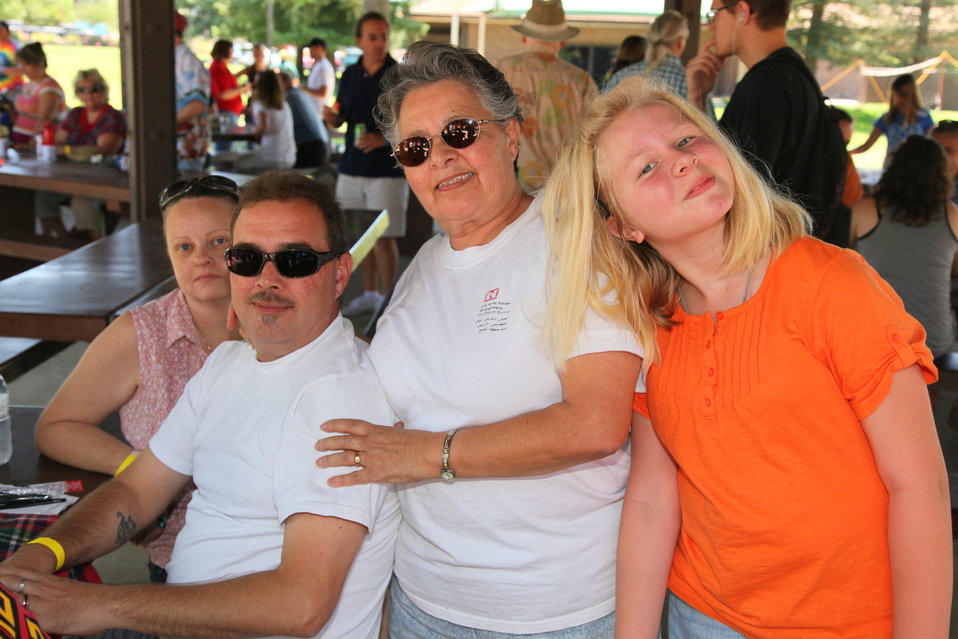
2011 Annual Picnic